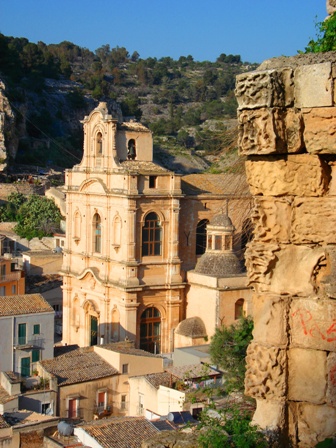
Italiano: Zisa Claudio, autore, chiesa di S. Maria La Nova, pubblico dominio